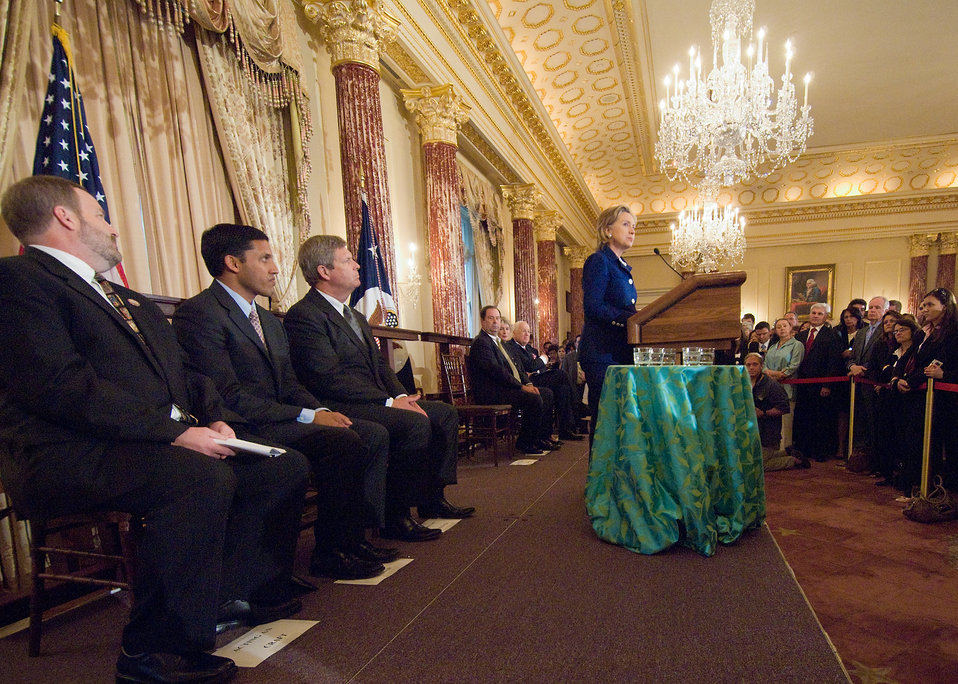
From left: Assistant Secretary, State Department William Craft, United States Agency for International Development Administrator Rajiv Shah, Agriculture Secretary Tom Vilsack, Secretary of State Hillary Clinton (speaking), World Food Prize Chairman John Ruan III, Mrs. Janis Ruan and World Food Prize President Ambassador Kenneth Quinn, announce the 2010 World Food Prize Laureates in the Benjamin Franklin Room at the U.S. State Department in Washington, DC, on Wednesday, June 16, 2010. This years co-winners are Reverend David Beckmann, President of Bread for the World and Jo Luck, Leader, Heifer International. USDA Photo 10di1404-009.